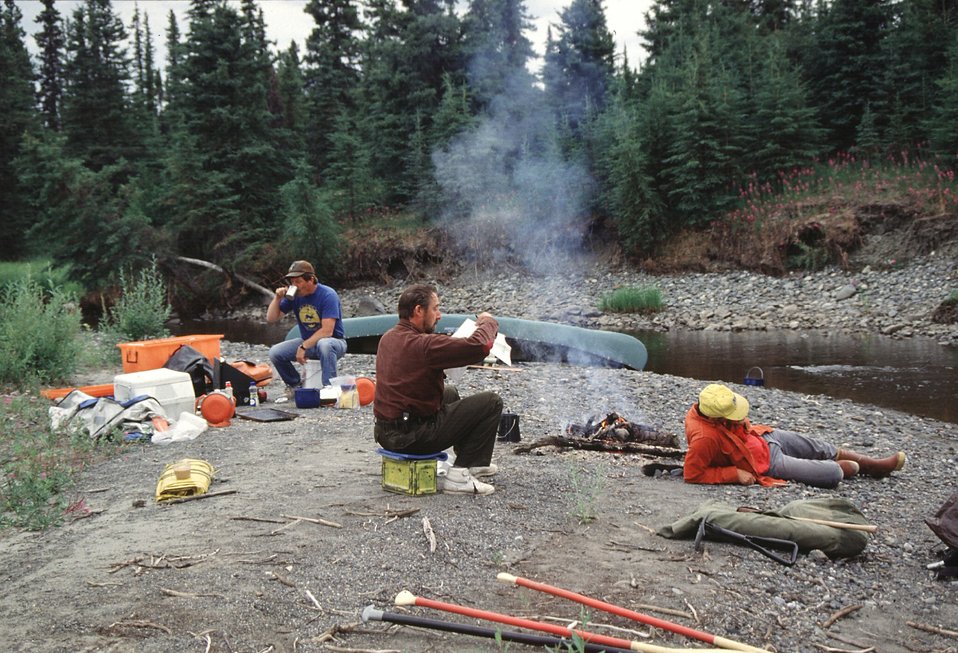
River camping along Gulkana NWSR, Alaska